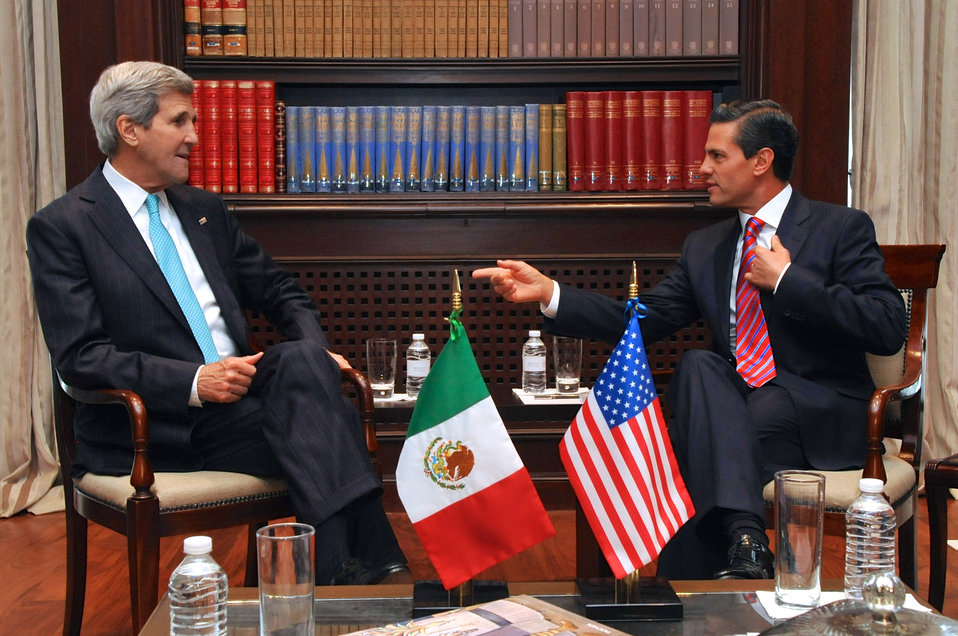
Secretary Kerry Meets With Mexican President Peña Nieto at Los Pinos

Mexican President Enrique Peña Nieto chats with U.S. Secretary of State John Kerry at the outset of a bilateral meeting at Los Pinos, the presidential residence and office compound, in Mexico City on May 21, 2014.